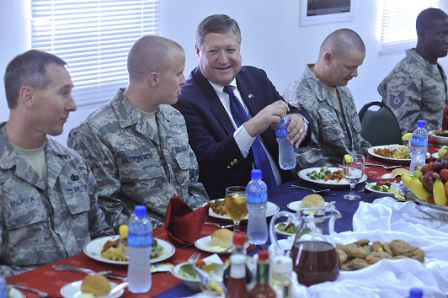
Secretary Donley visits the CAOC

Secretary of the Air Force Michael Donley shares lunch Oct. 11 with Airmen and recognizes award winners from the Combined Air and Space Operations Center located in Southwest Asia. The CAOC commands and controls the broad spectrum of what airpower brings to the fight: Global Vigilance, Global Reach, and Global Power.